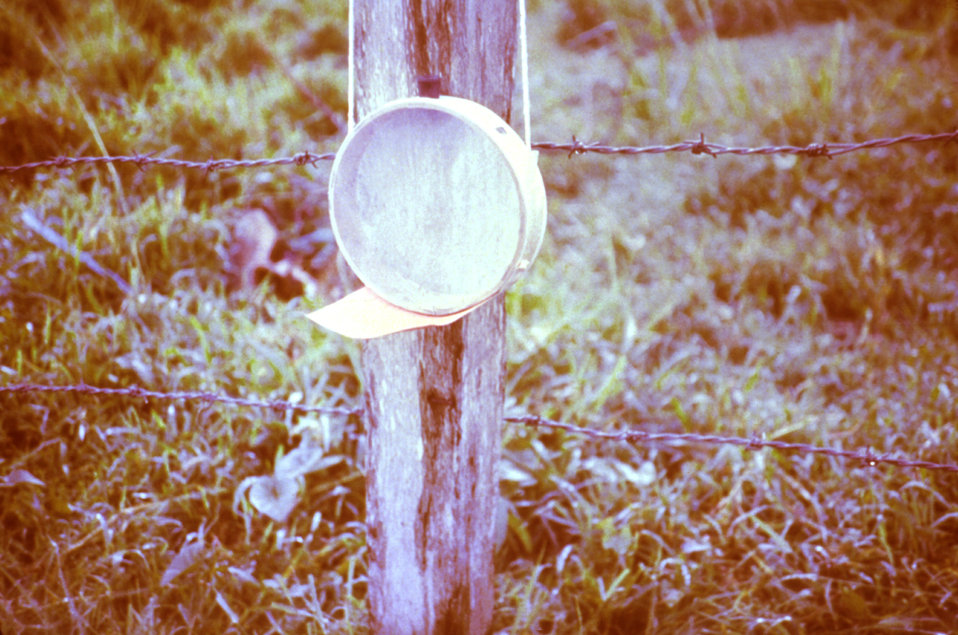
This 1981 photograph depicts the placement of a bioassay cage, along with an attached dye card inside the geographic parameter of a bioassay insecticide study.